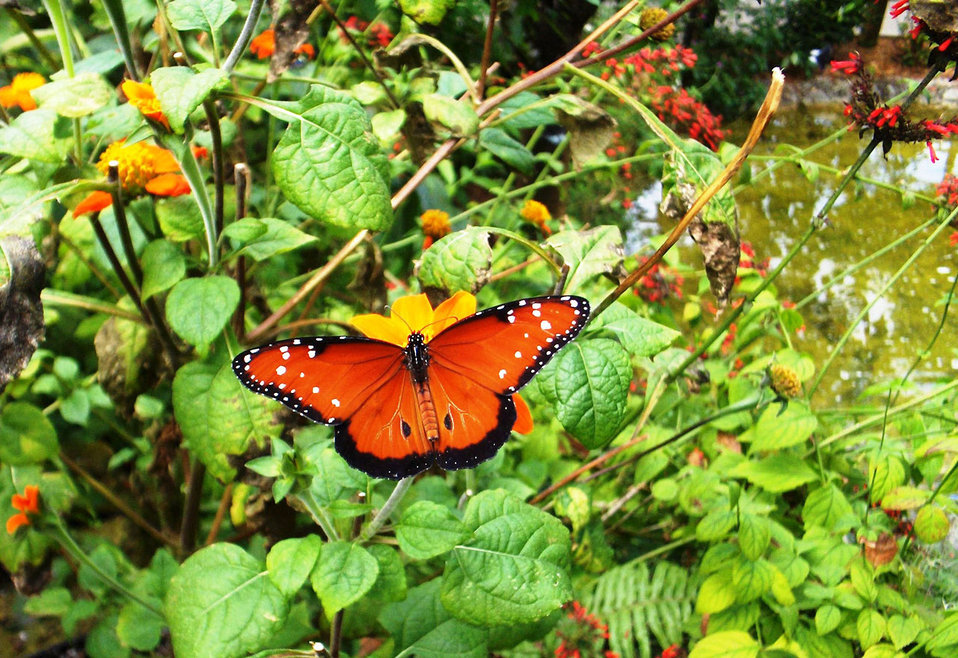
Orange butterfly

Bright orange butterfly from miami.